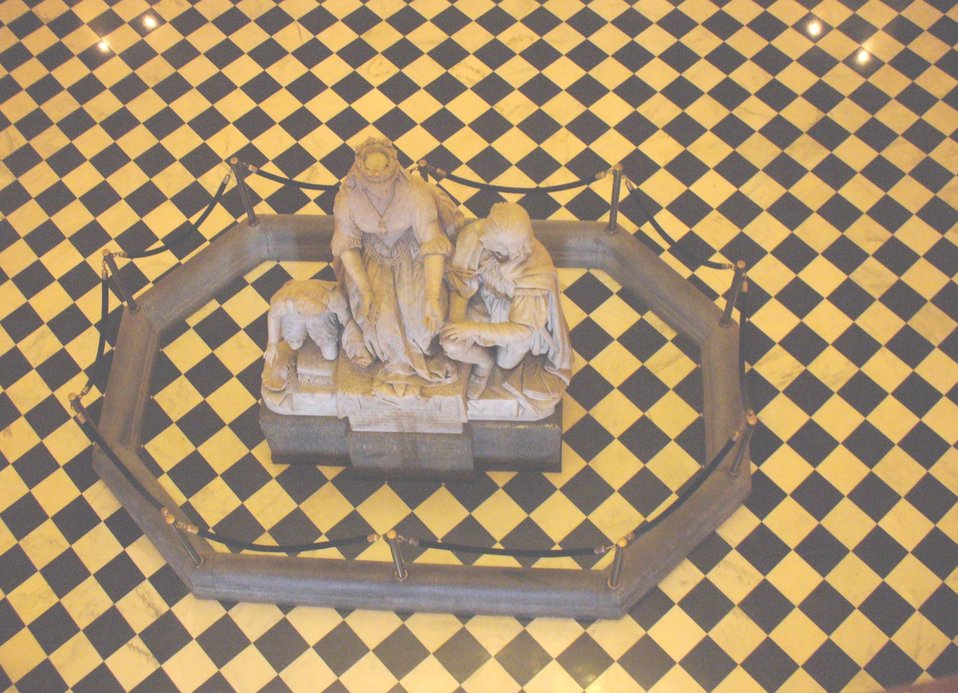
Columbus' Last Appeal to Queen Isabella: Same statue from above.